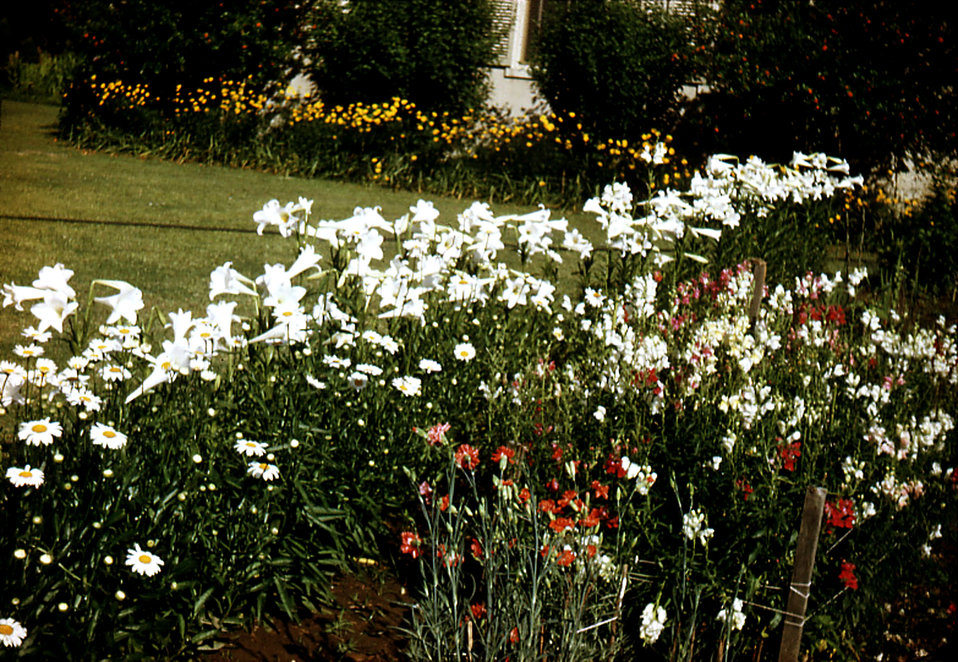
This historic image depicted a beautiful garden on the grounds of the Carville, Louisiana Leprosarium. A number of leprosarium patients were wonderful gardeners, and these Easter Lilies could attest to their level of expertise. Also grown on the premises were numbers of orchids that were also managed by the patients. The hospital was a self-contained compound with its own storehouse, laundry, food-processing facilities, patient treatment centers, and recreational facilities, as well as numerous gardens such as this the one pictured here. Outdoor activities helped to improve the dispositions of the patients who'd been quarantined, and stigmatized due to their curable affliction.